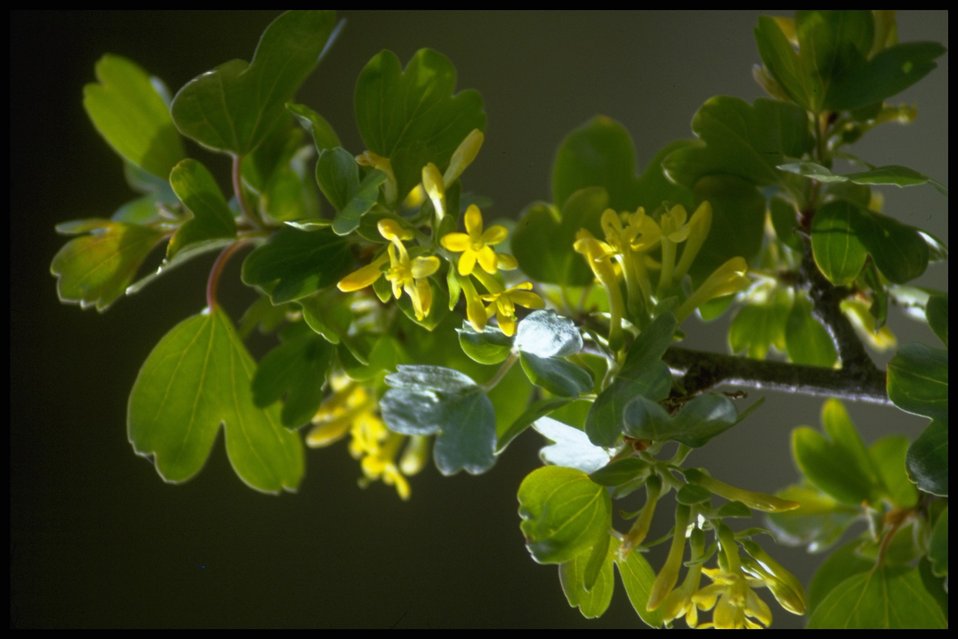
Close shot of Golden Currant wildflower, Lakeview District.